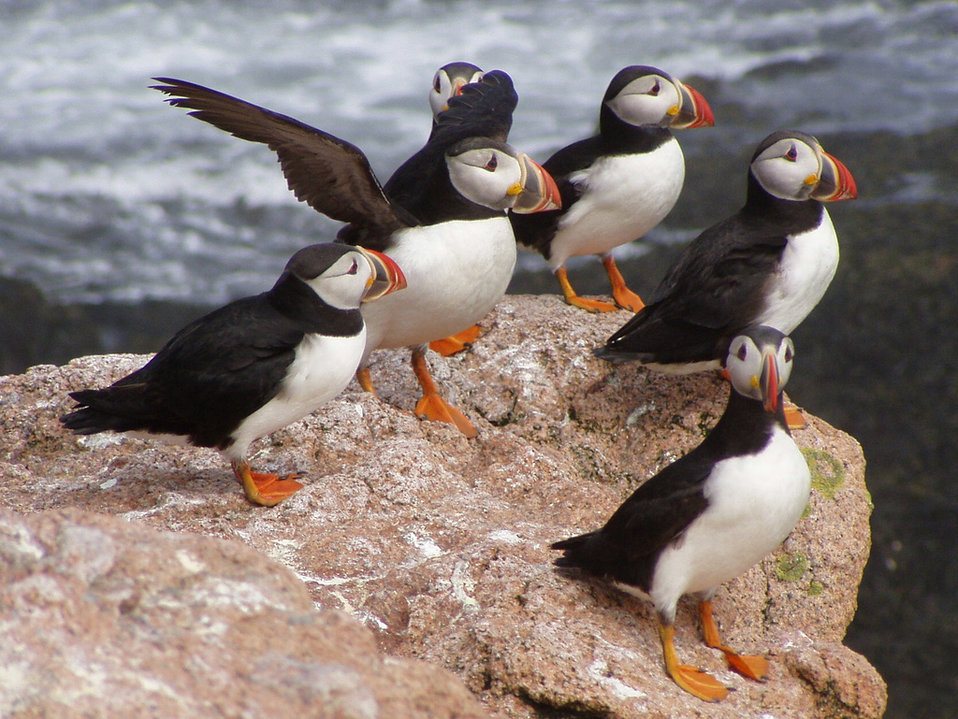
atlantic puffins, maine coastal islands nwr, fws